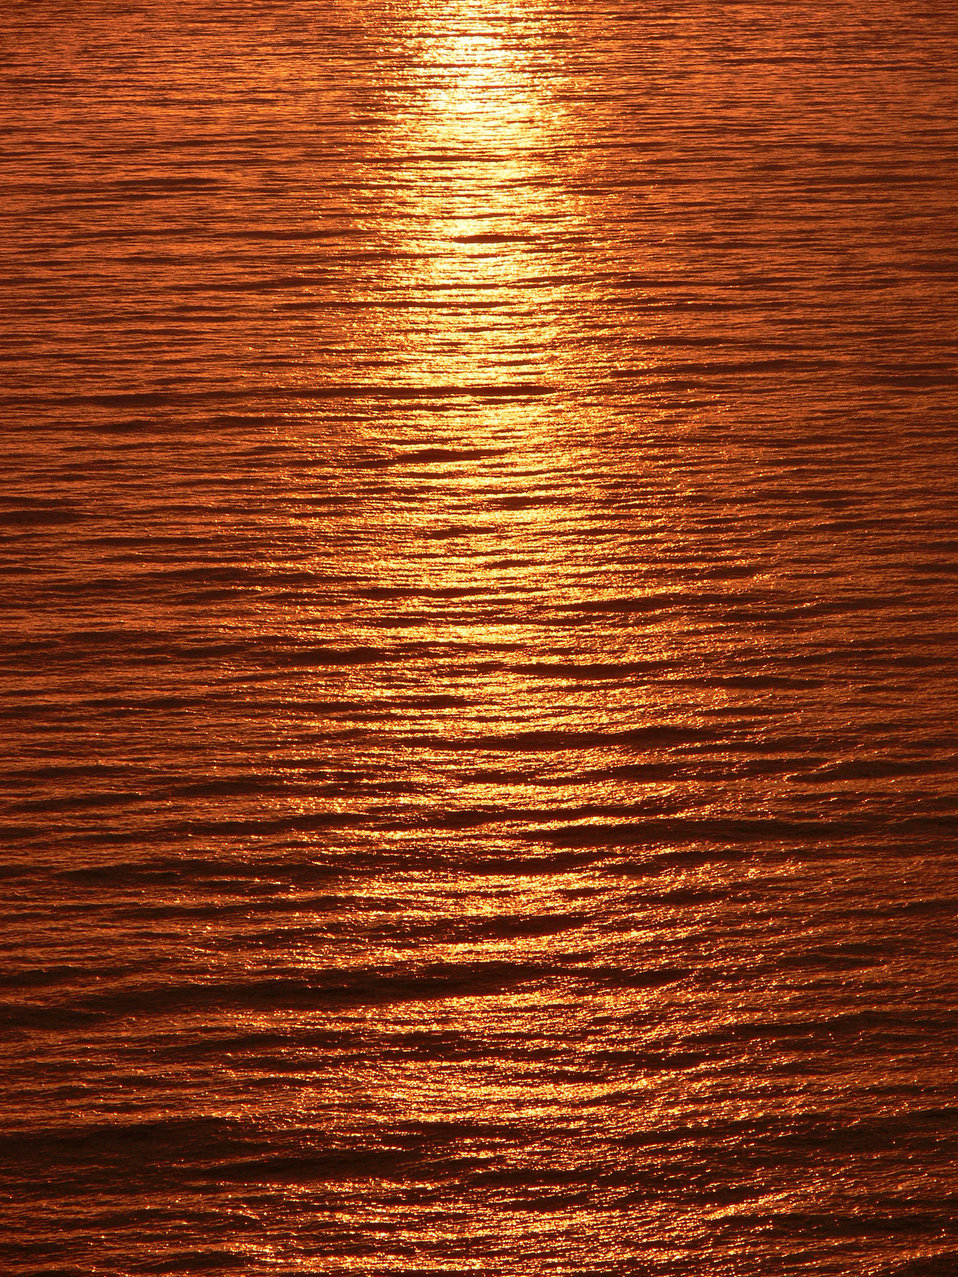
Sunset light over sea

Streak of light from sunset reflected in calm sea.